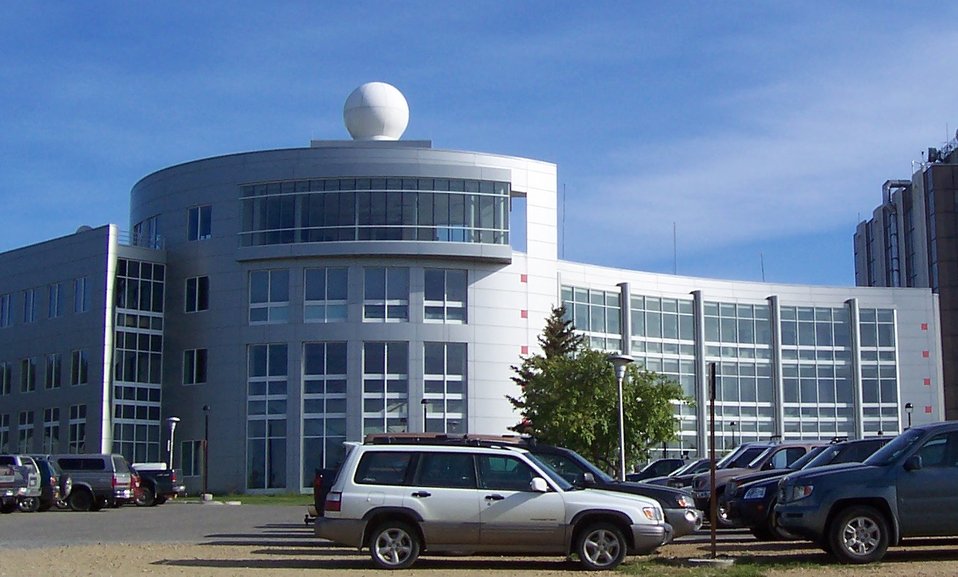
zh:國際北極研究中心